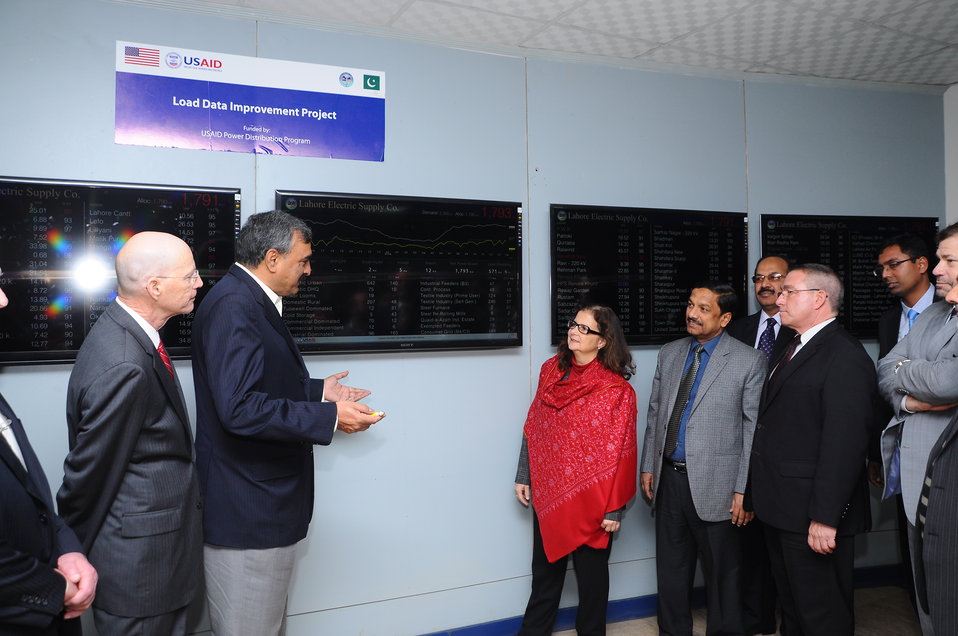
U.S. Improves LESCO’s Capacity to Reduce Load-Shedding

Unplanned load-shedding is one of the leading challenges in the country’s power crisis, costing Pakistan an estimated two percent of its Gross Domestic Product and 400,000 jobs in 2012. Load-shedding is a consequence of the imbalance between electricity generation and demand, and only increased generation will completely eliminate load-shedding. Unscheduled load-shedding, however, is the result of a lack of real-time energy consumption data and can be reduced by improved monitoring systems, such as the USAID project inaugurated at LESCO.